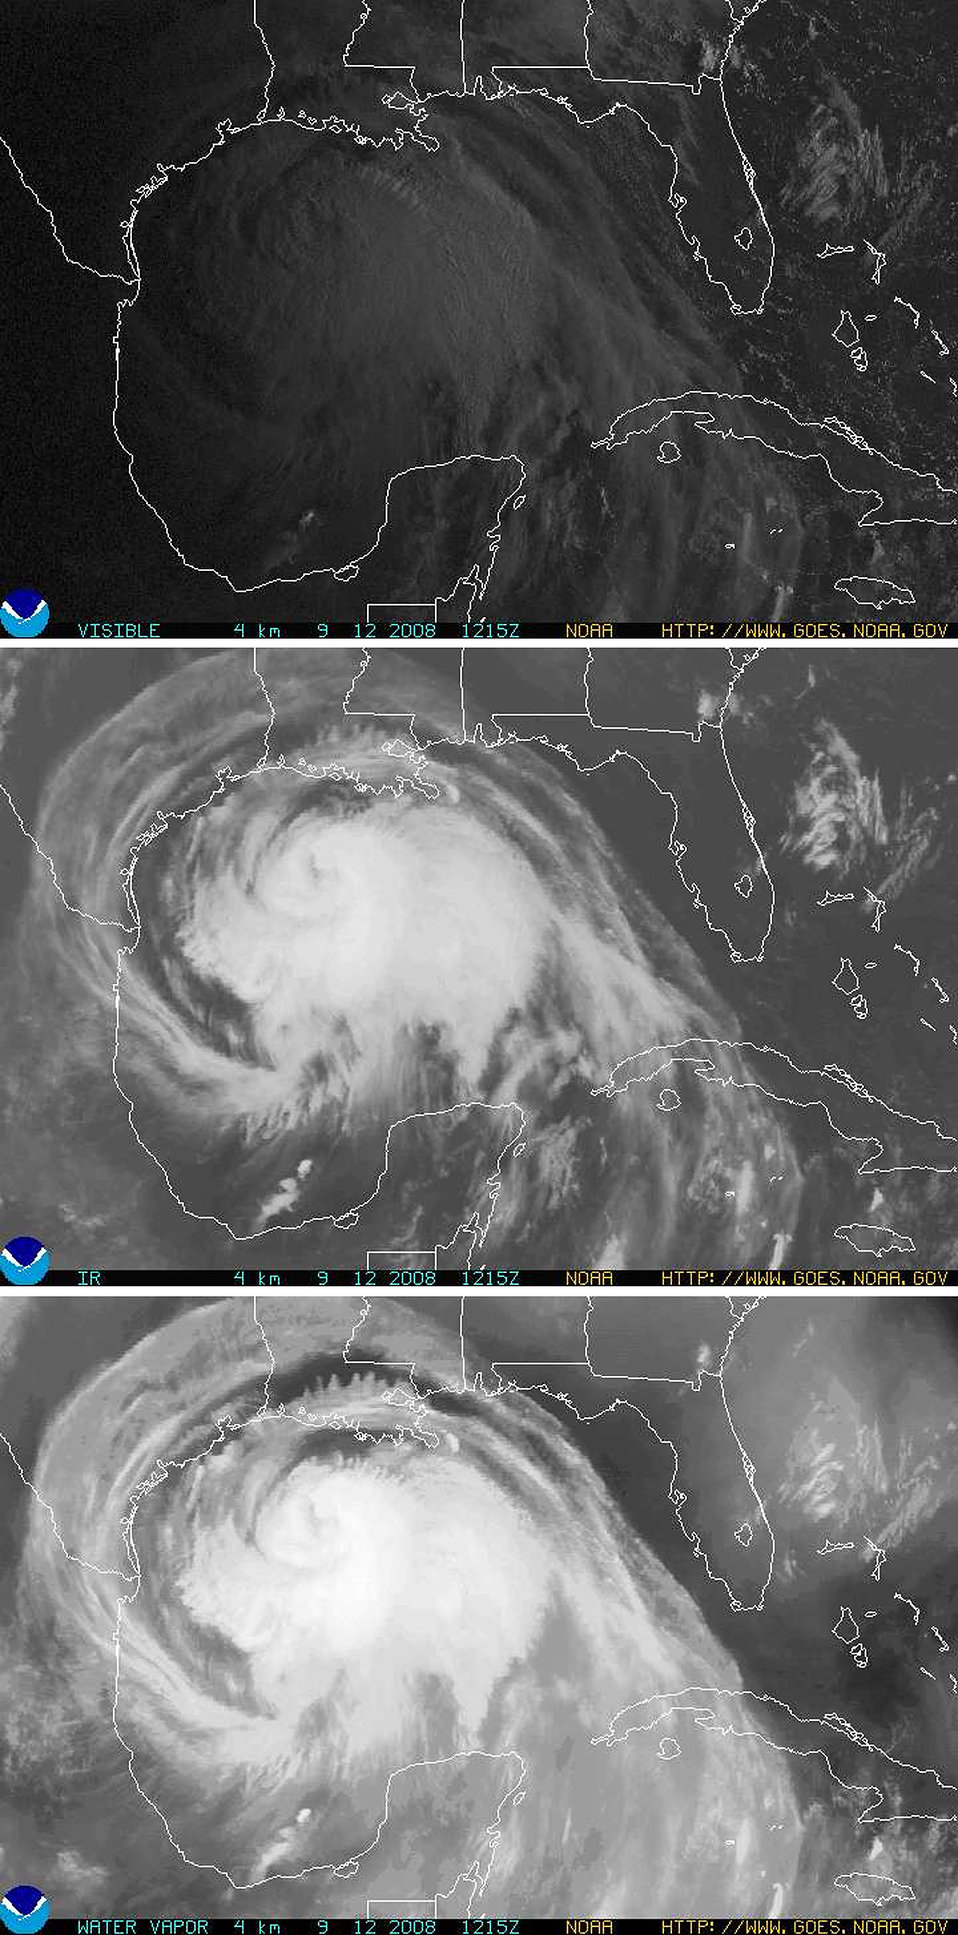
Provided by the National Oceanic and Atmospheric Administration (NOAA) Satillite Information Service, a division of the National Environmental Satellite, Data, and Information Service (NESDIS), these three radar images depict hurricane Ike at 12:15am on Friday, September 12, 2008, as it neared the Texas coast. From the top to bottom respectively, these images were derived from the visible cloud cover in the Gulf of Mexico (top), the infrared wavelengths of light emitted from the hurricane (middle), and the water vapor clouds (bottom) within Ike.